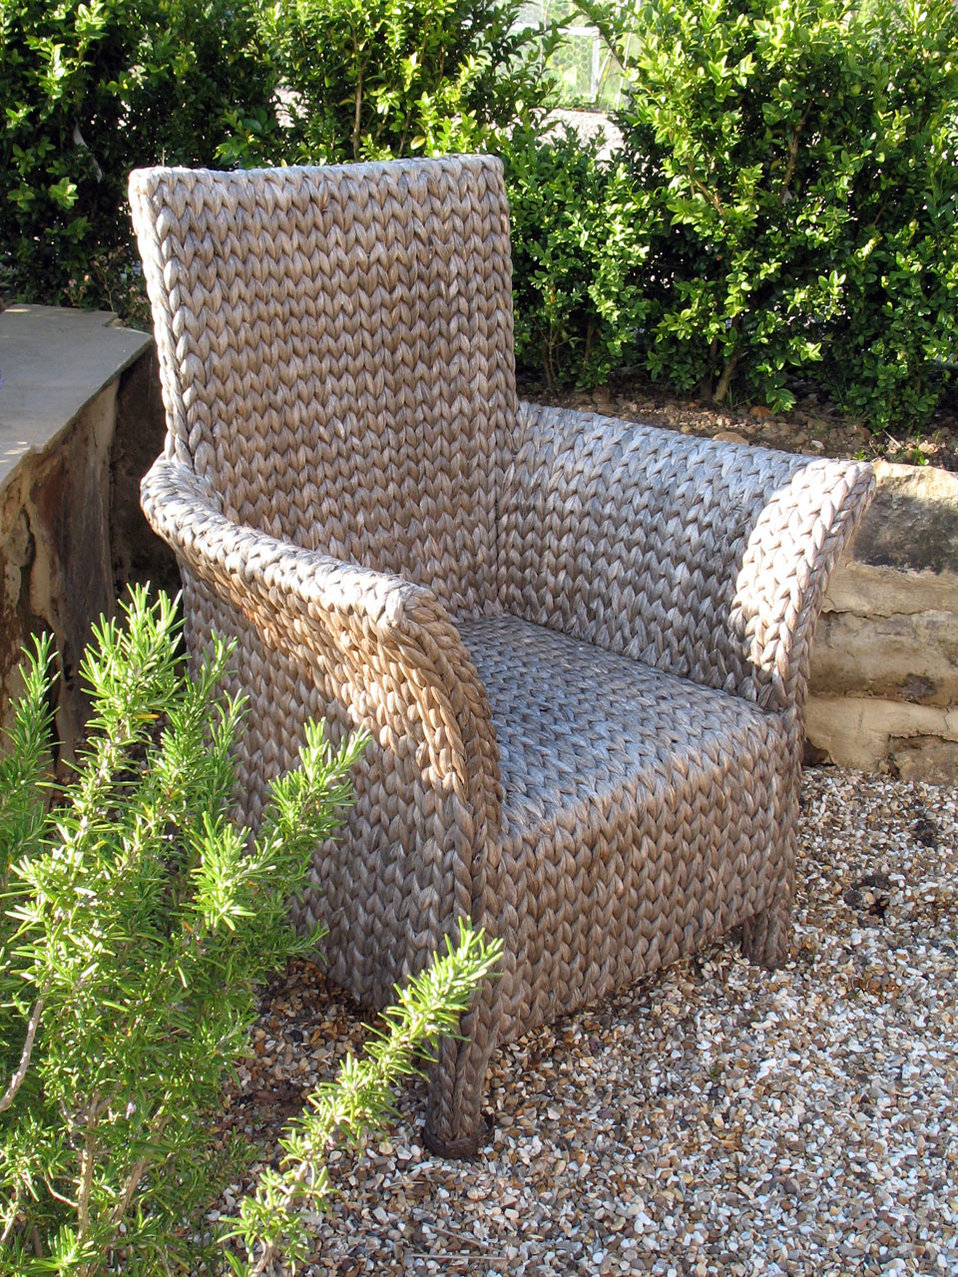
Basket chair

A basket chair on the garden.